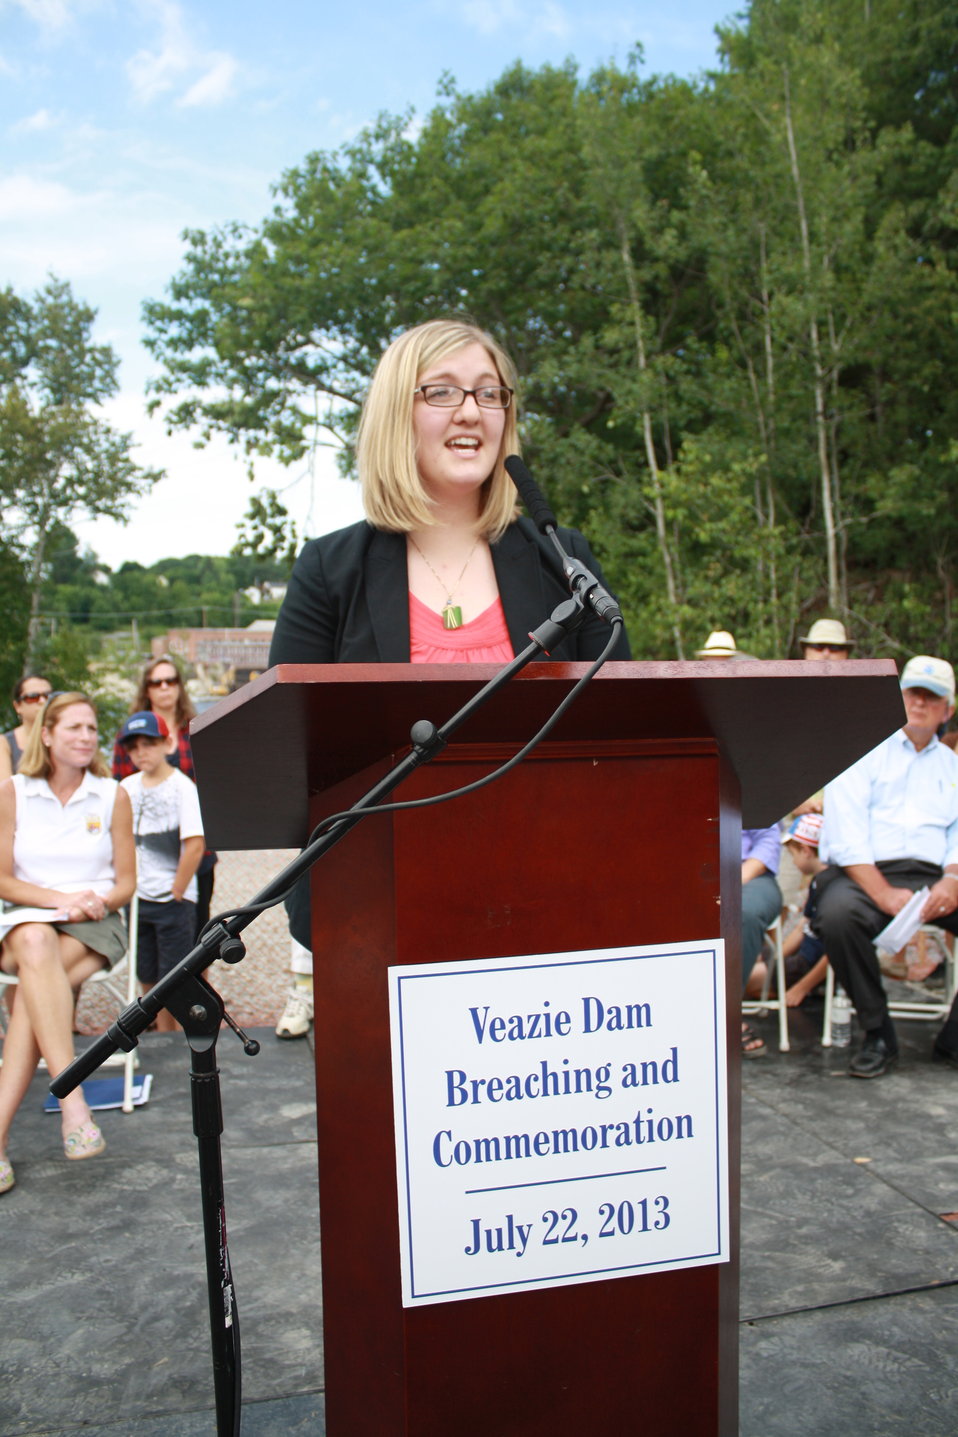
Veazie Dam Removal

Paige Eggleston from the office of Senator Susan Collins.